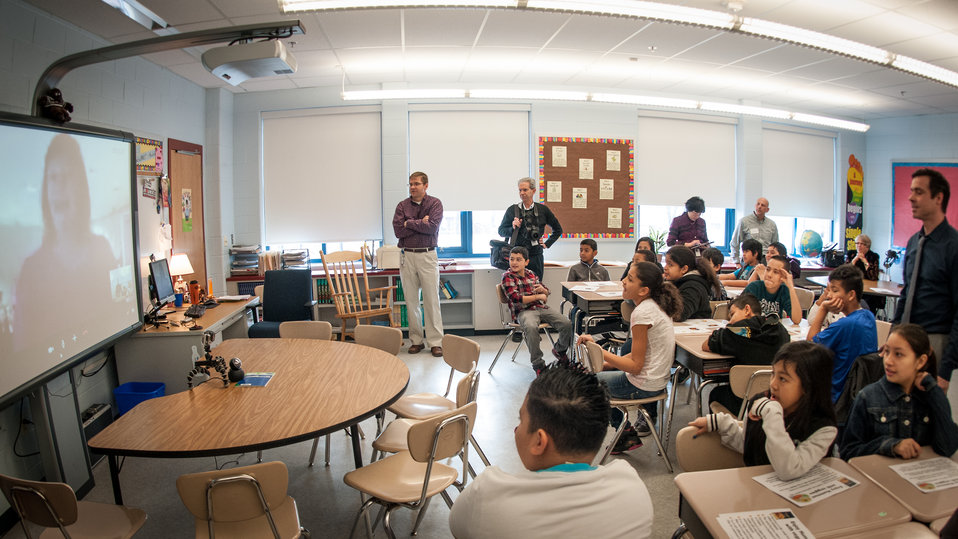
Harmony Hills Elementary School 5th grade teacher Mr. Damien Grasso, right, and Dalry Primary School teacher Mrs. Karen McAllister, left, begin a live overseas video conversation, during the inaugural International School Meals Day at Harmony Hills Elementary School in Silver Spring, MD, on Friday, March 8, 2013. Mr. Grasso's 5th grade class was paired with Mrs. McAllister’s class in North Ayershire, Scotland, United Kingdom. The Harmony Hills students will sit at the semi-circular table to interact, with the Scottish students. USDA's Food and Nutrition Service oversees the administration of 15 nutrition assistance programs that work in concert to form a national safety net against hunger. Learn more by visiting www.fns.usda.gov and twitter @USDANutrition.